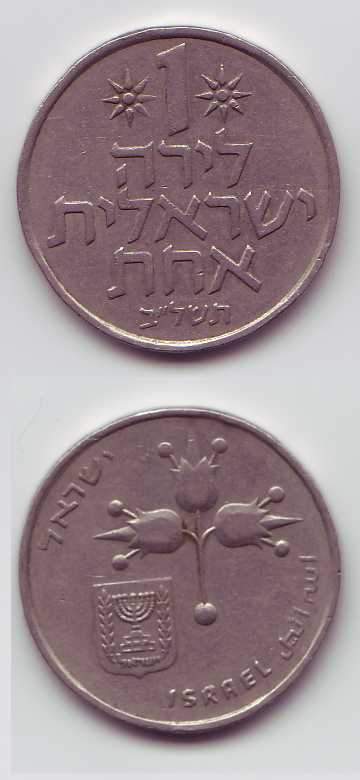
1 Israeli Lira coin - התשל'ב